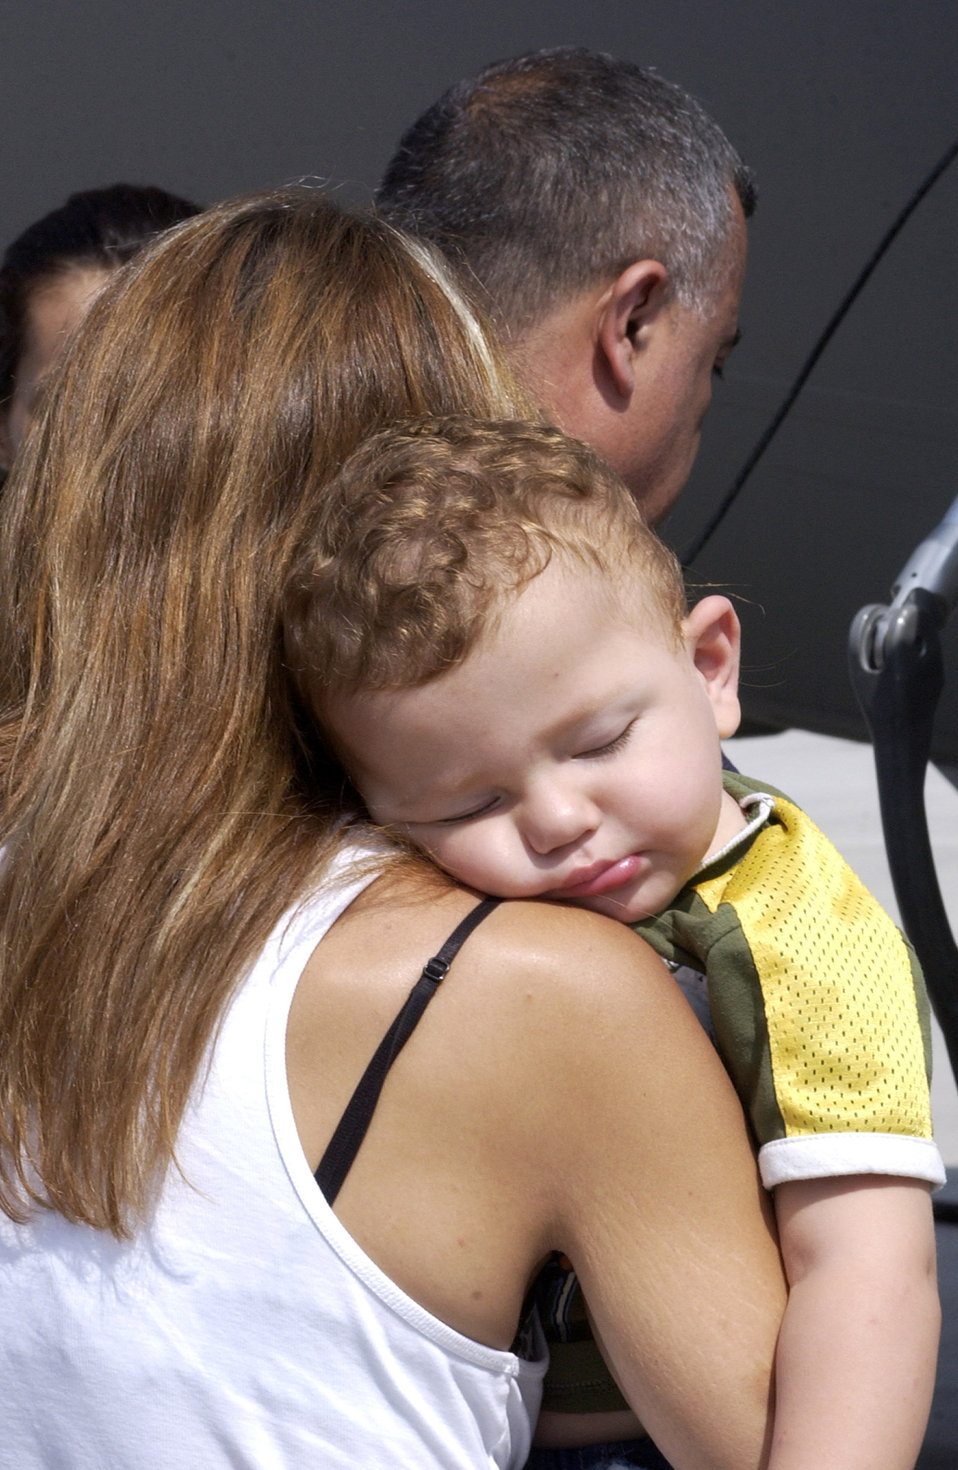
Heading to America

A young child sleeps as his mother boards a C-17 Globemaster III at Ramstein Air Base, Germany, on Sunday, July 23. Airmen at Ramstein provided humanitarian assistance for American citizens departing the Lebanon crisis.